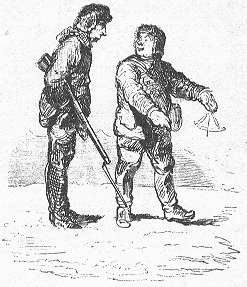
An illustration from Jules Verne's novel 'Journeys and Adventures of Captain Hatteras', part I: 'The English at the Noth Pole' drawn by Édouard Riou and/or Henri de Montaut. Polski: Ilustracja powieści Juliusza Verne'a 'Podróże i przygody kapitana Hatterasa', części I: 'Anglicy na Biegunie Północnym' autorstwa Édouarda Riou i/lub Henri de Montauta. Français : Jules Verne: 'Voyages et aventures du capitaine Hatteras - Les Anglais au Pôle Nord', Édouard Riou et Henri de Montaut.